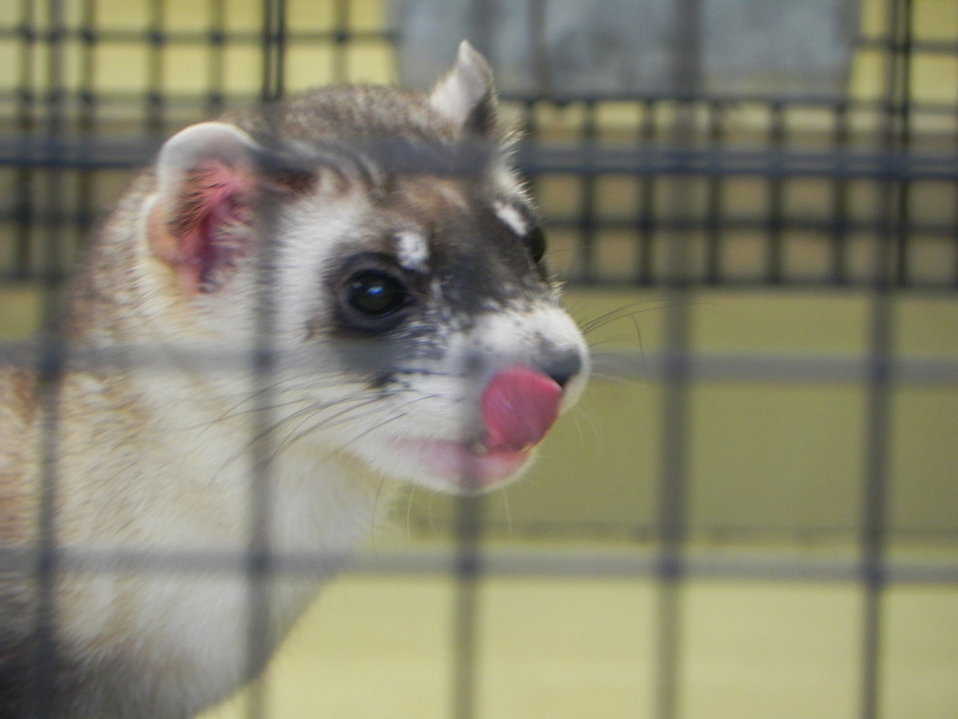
Black-footed Ferret Breeding Center at the Phoenix Zoo

The Black-footed Ferrets in the Black-footed Ferret Breeding Center at the Phoenix Zoo 11/18/2010.